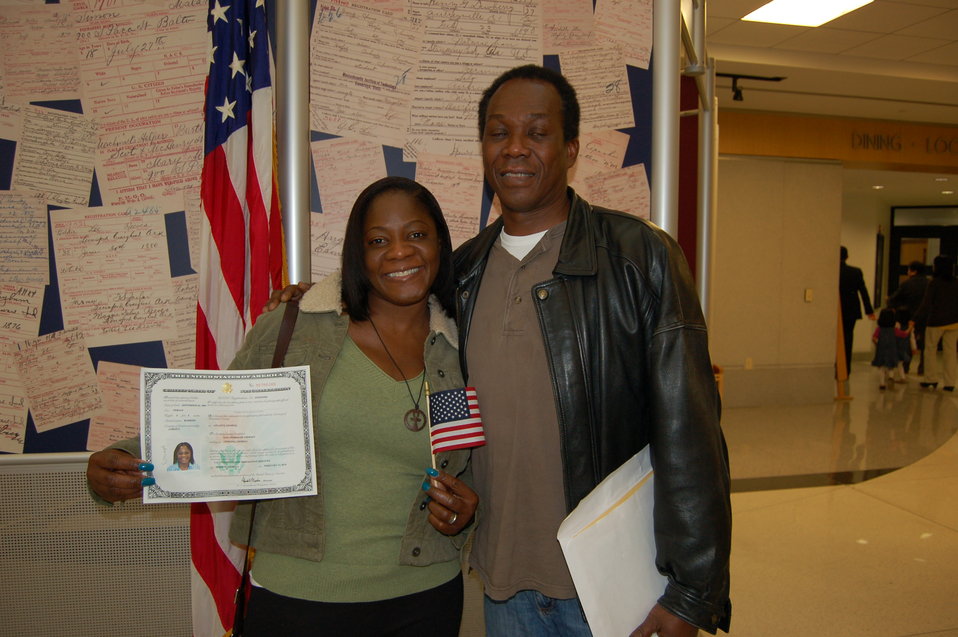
New Citizens